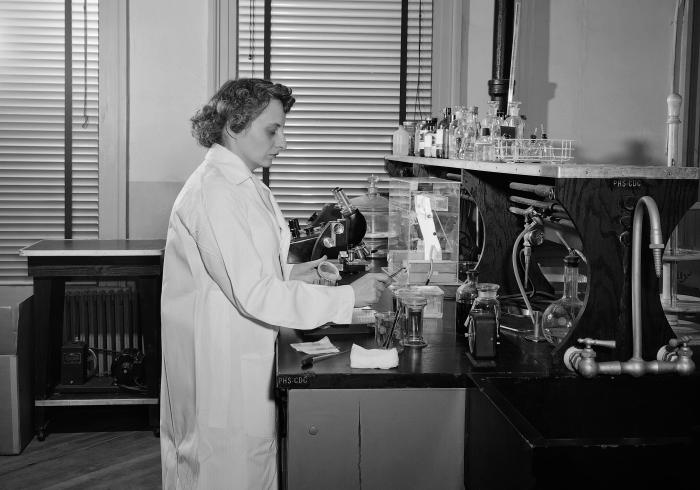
This historic 1955 image depicted Dr. Marguerite Candler, as she was performing an experimental analysis, while in her Centers for Disease Control's experimental hematology laboratory.